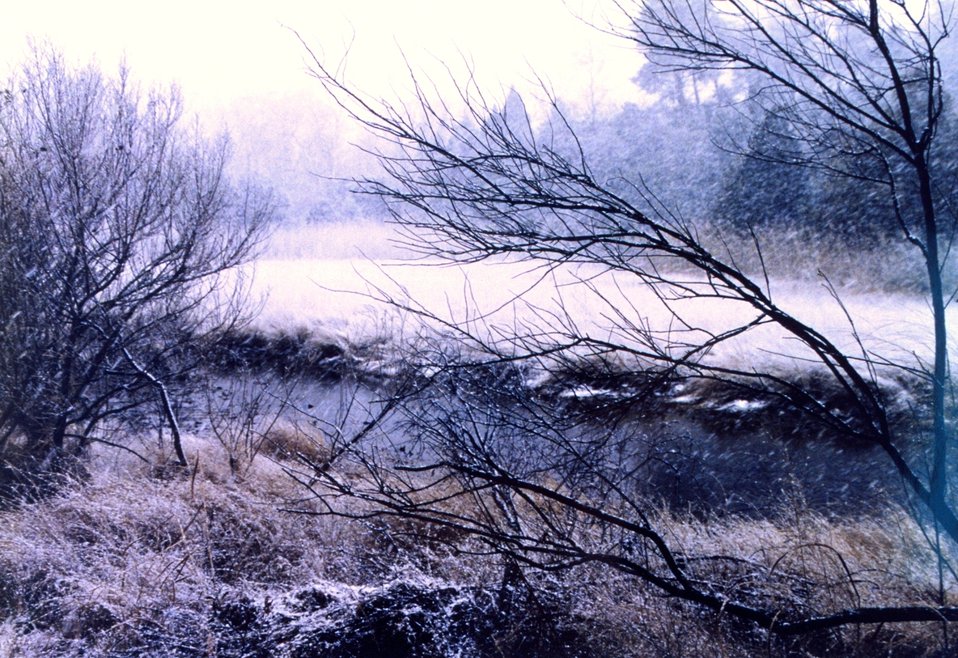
A snowy winter day in the marsh.